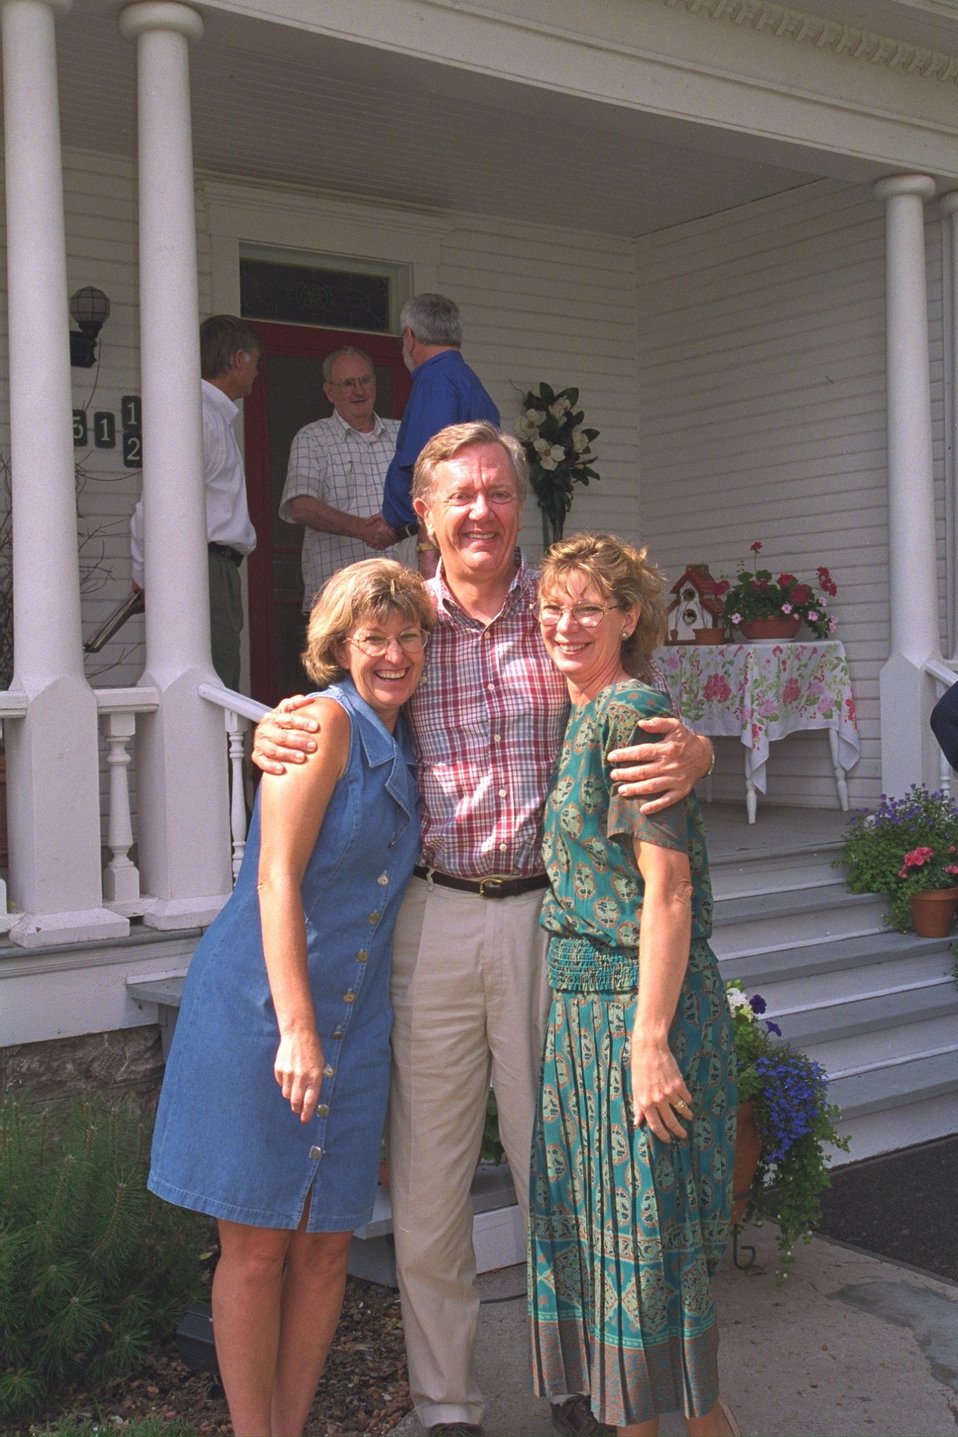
Secretary Babbitt and Proprietors of the Sage Country Inn, Burns. The site of the Steens designation meeting.